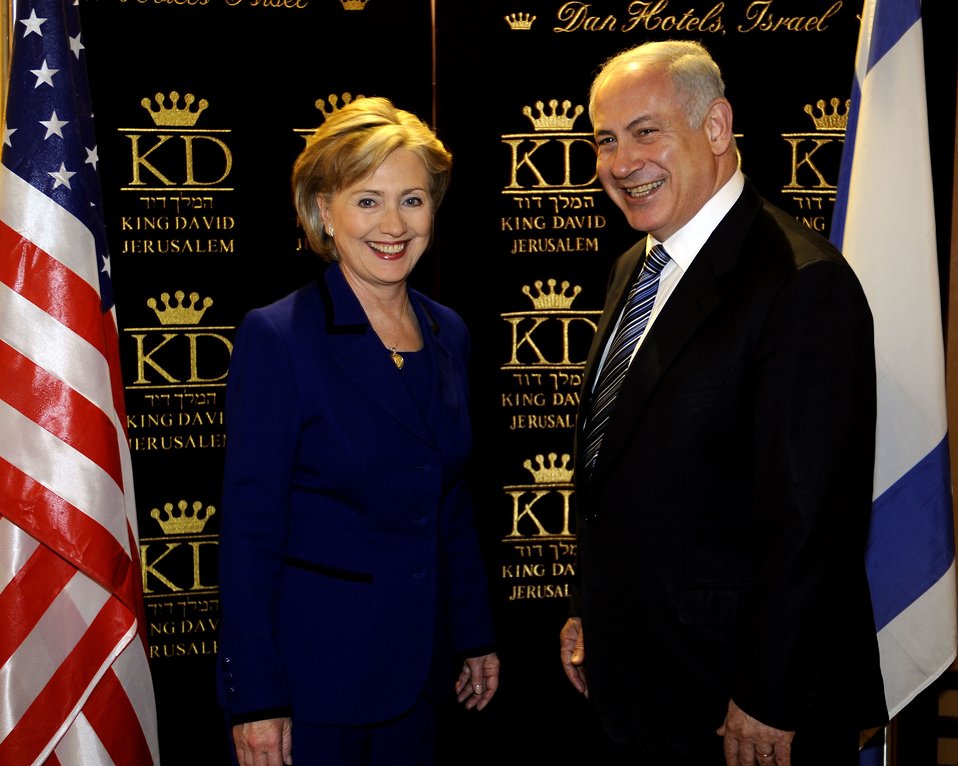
Secretary Clinton before her meeting with Israeli Prime Minister-Designate Benyamin Netanyahu at the King David Hotel, Jerusalem March 3, 2009.